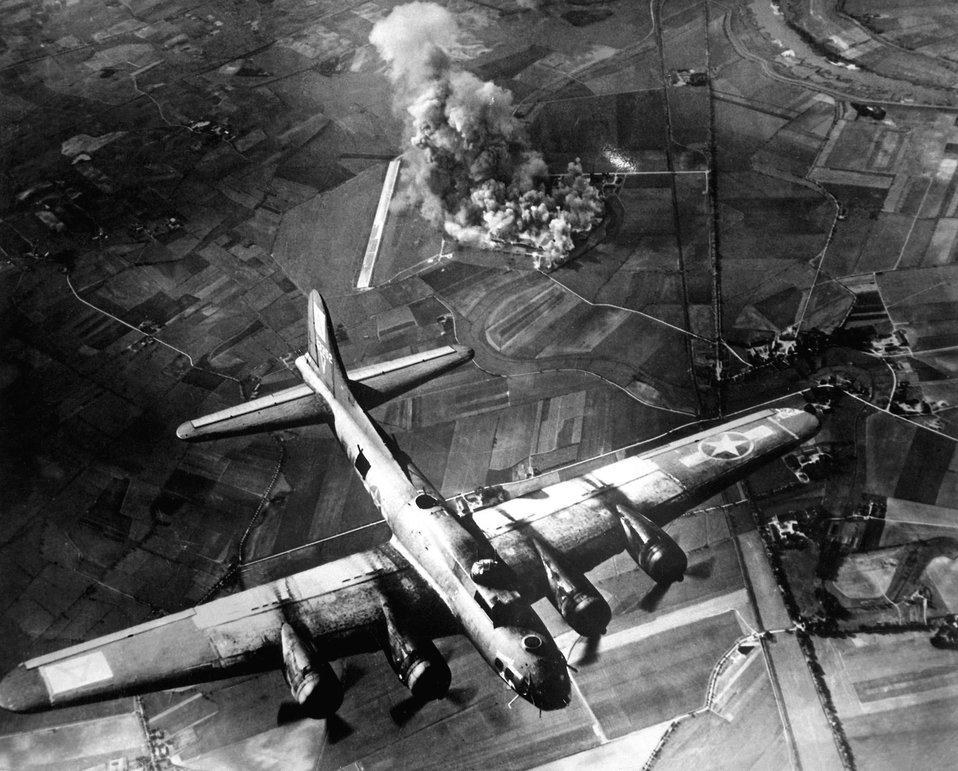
The first big raid by the 8th Air Force

1940's --